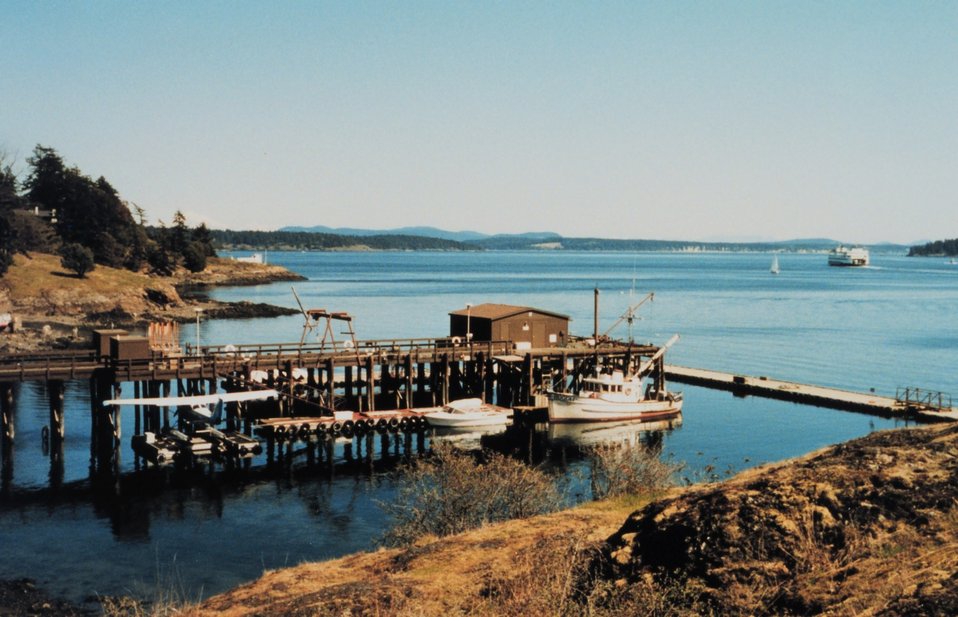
Friday Harbor area on the east side of San Juan Island